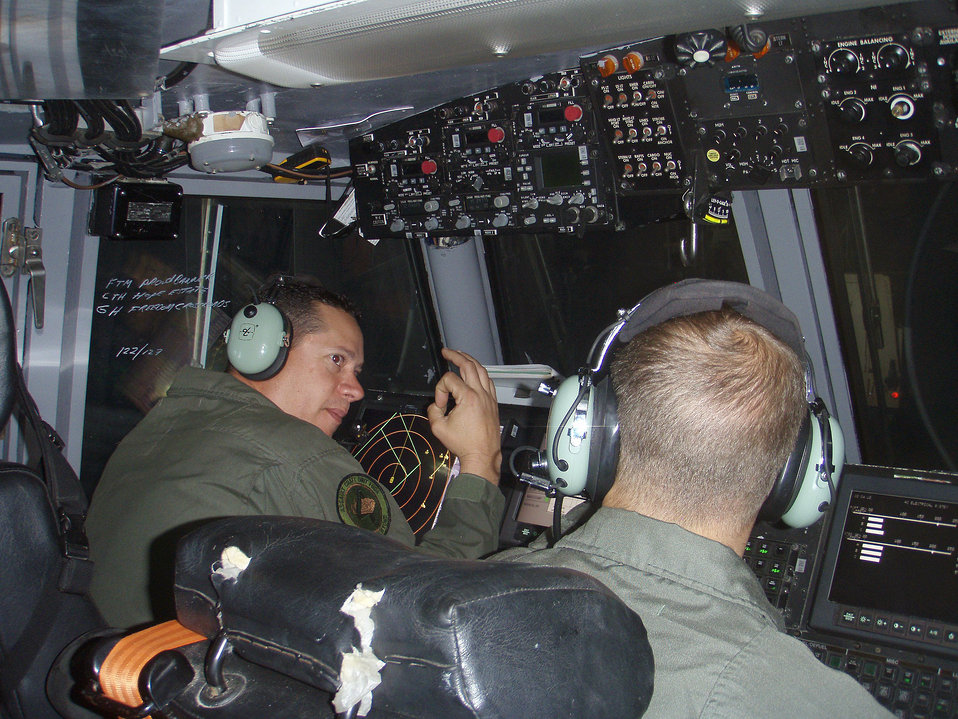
Photographed by U.S. Public Health Service (USPHS) Lt. Cmdr. Gary Brunette, this image was captured inside cockpit of a landing craft known as a Landing Craft Air Cushion [LCAC], which was deployed from the USS Bataan soon after the Haitian earthquake in January, 2010.